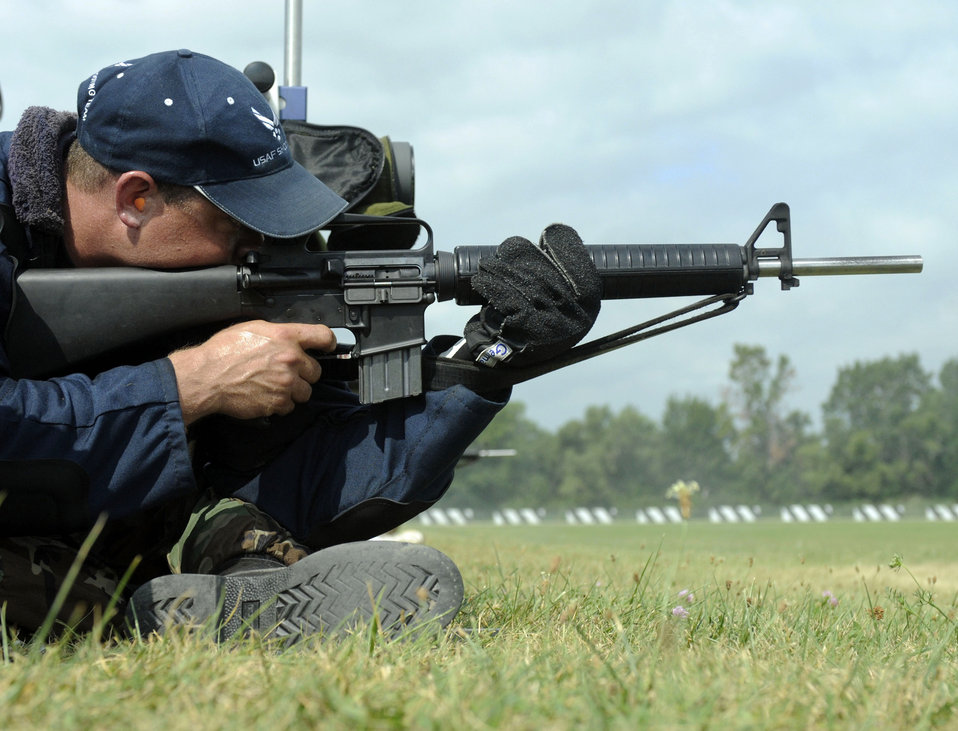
USAF shooting team aims for excellence at national competition

Master Sgt. Matthew Griffin, a member of the U.S. Air Force Shooting Team, prepares to fire at his target from the seated position during the 200-meter portion of the high power rifle competition of the 2009 National Rifle and Pistol Championships at Camp Perry, Ohio. Sergeant Griffin is a Reservist from the 934th Airlift Wing at the Minneapolis Air Reserve Station, Minneapolis, Minn.